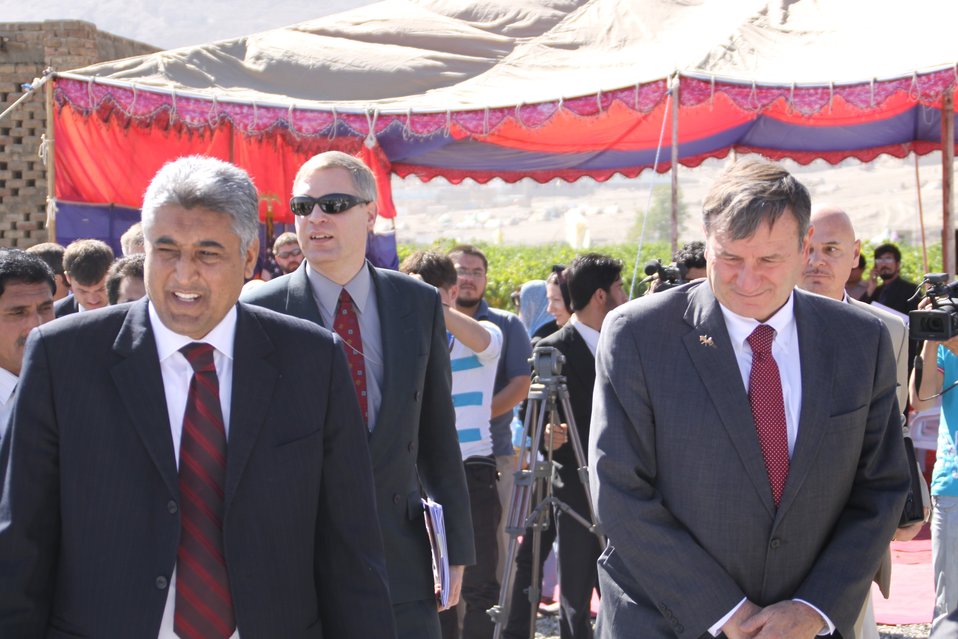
AVIPA Plus Wheat Seed Distribution 101005

US Ambassador Karl Eikenberry and USAID Acting Mission Director Kevin Brownawell joined the Minister of Agriculture, Irrigation and Livestock, H.E. Minister Mohammed Rahimi in signing a Memorandum of Understanding and distributing vouchers to area farmers for wheat and fertilizer.